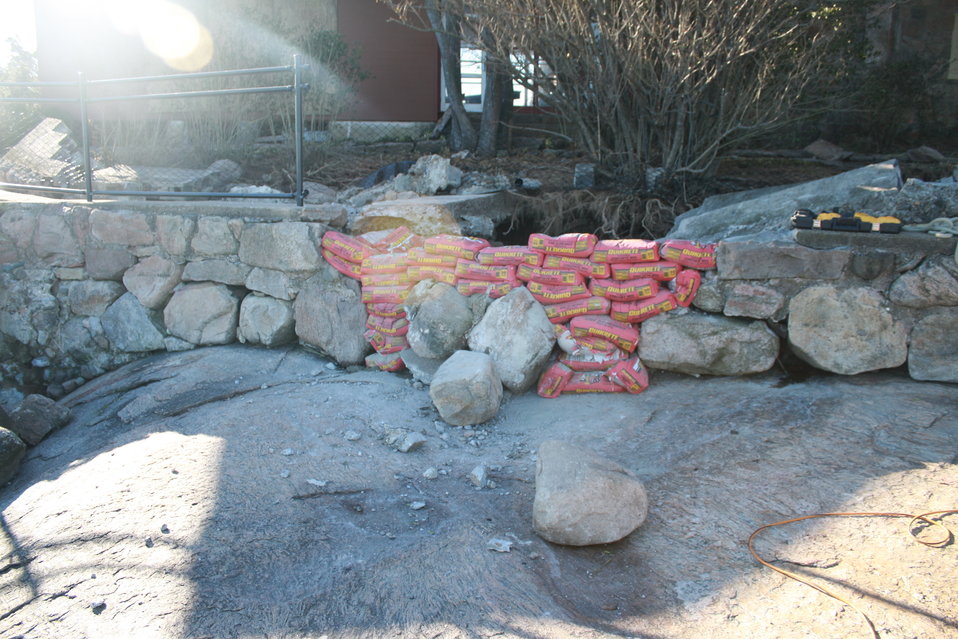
Beginning repairs at Stewart B. McKinney National Wildlife Refuge (CT)

A wall that refuge staff and crews are working to repair after parts of it were damaged after Hurricane Sandy.